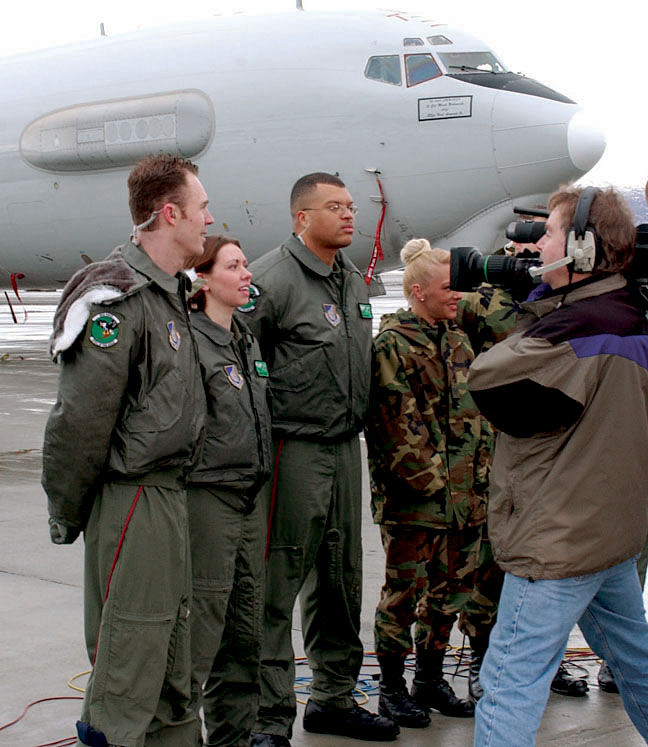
Alaskan top ten

ELMENDORF AIR FORCE BASE, Alaska -- Ten members of the 962nd Airborne Air Control Squadron here will share the spotlight with David Letterman when they present a